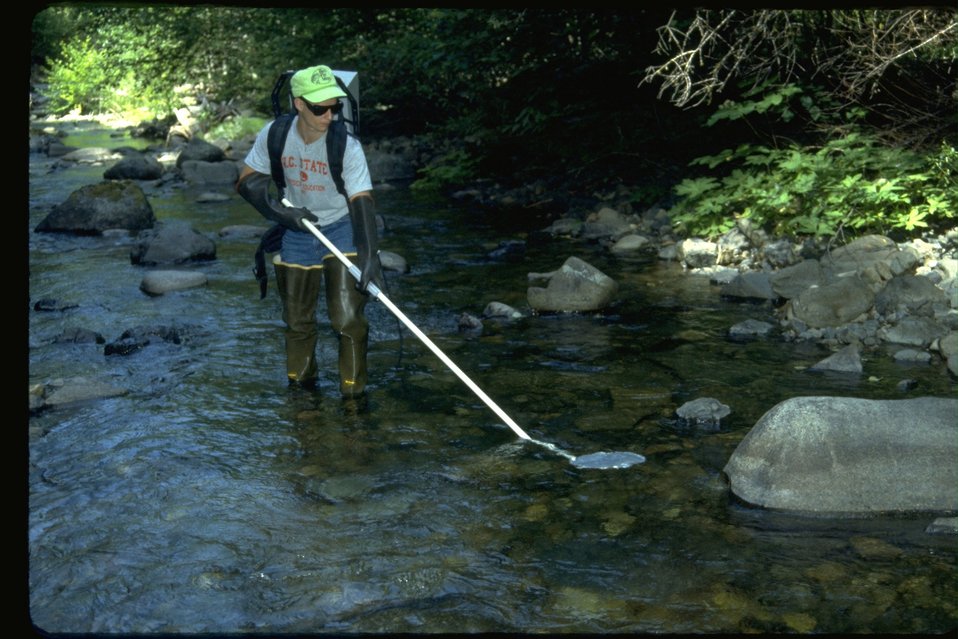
Elijah using electro shocker for fish population study.